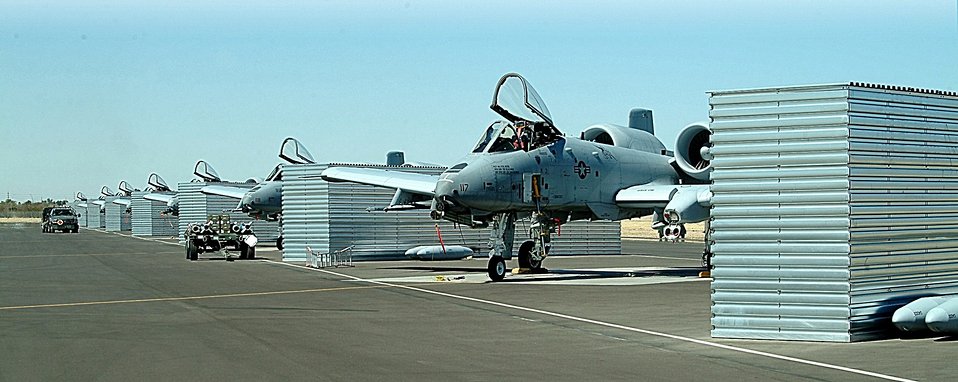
Missouri fighter wing goes to wild, wild west

A-10 Thunderbolt IIs, deployed from the 442nd Fighter Wing at Whiteman Air Force Base, Mo., await the next training mission at Davis-Monthan Air Force Base, Ariz. Reservists Missouri deployed to Arizona to practice employing live munitions on the Barry M. Goldwater Range near Gila Bend.